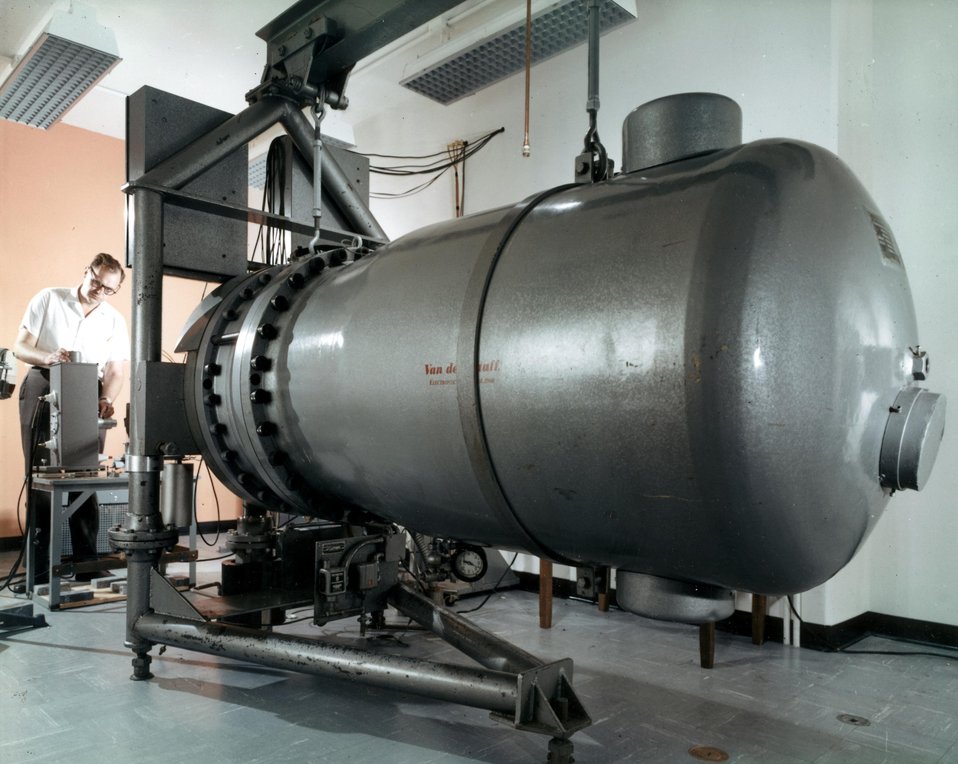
Van de Graaff electron accelerator. One of the mirrors of the optical equipment used to follow the light absorption of very short-lived chemical species produced by the electron beam is being adjusted. c. 1966